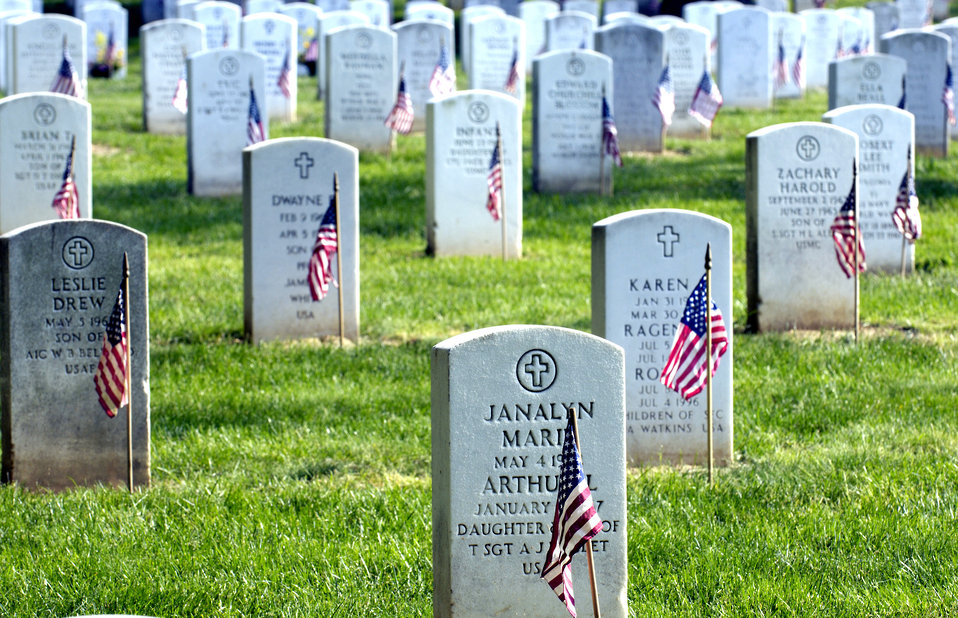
In remembrance

Soldiers, Sailors, Airmen and Marines from across the Washington D.C. area joined forces to place more than 227,000 flags at the front of headstones at Arlington National Cemetery on Thursday, May 25, 2006. The flags will remain at the headstones through Memorial Day.